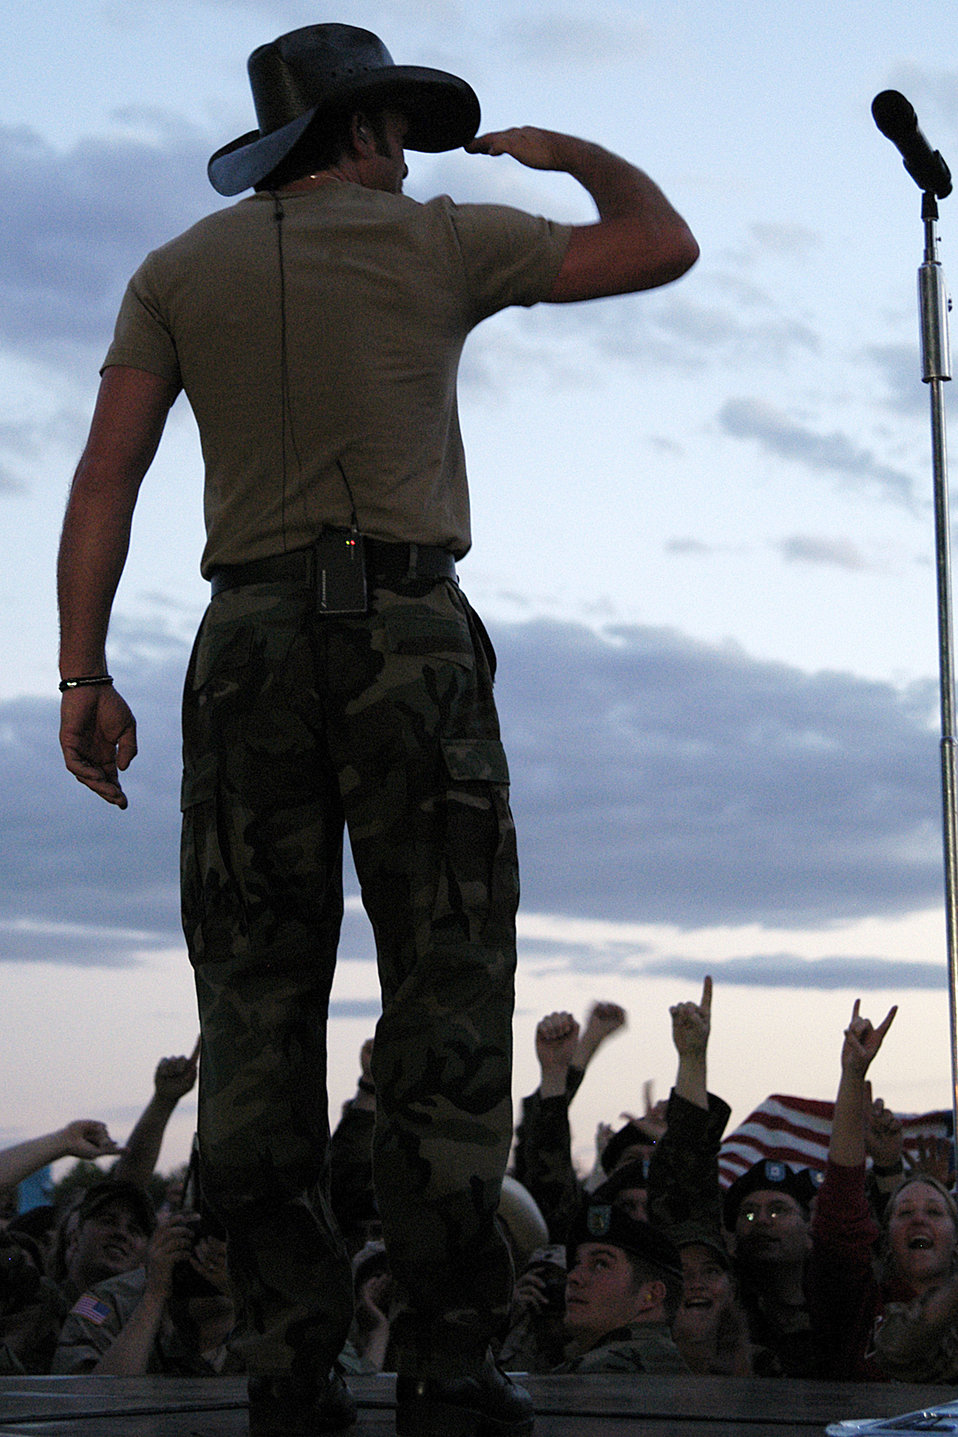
I salute you

FORT CARSON, Colo. (AFPN) -- Tim McGraw salutes fans to show his appreciation for their service during a free concert for military and family members here May 21. He put on the free concert to show appreciation for the military.